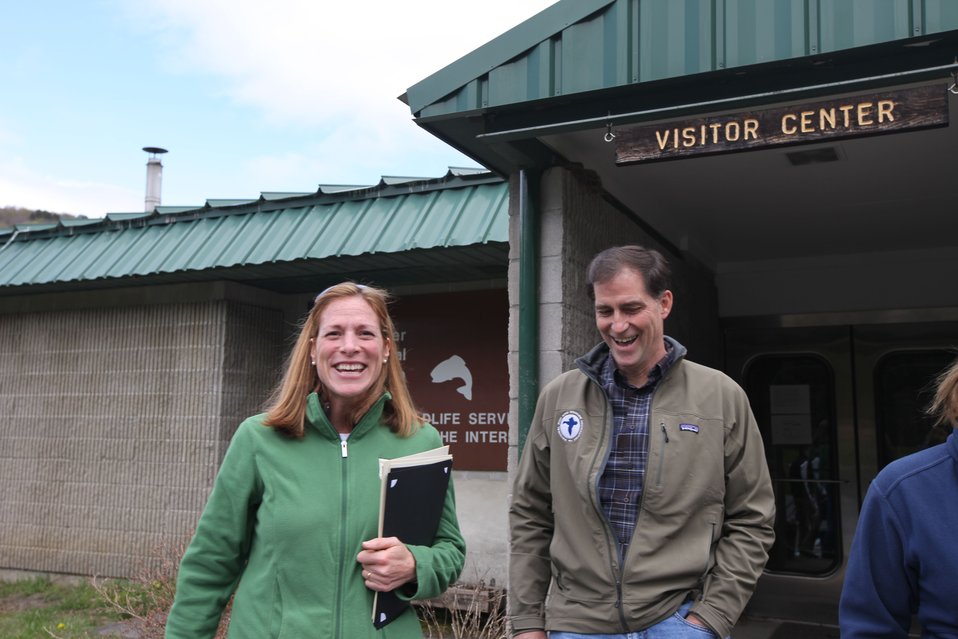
Northeast Regional Director Wendi Weber welcomes Service Director Dan Ashe to White River NFH

U.S. Fish & Wildlife Service Director Dan Ashe visits the Northeast Region
for a tour of the White River National Fish Hatchery in Bethel, Vermont on
April 27, 2012. The hatchery was devastated by Tropical Storm Irene and
Dan Ashe had the chance to meet and thank the staff for their heroic work.
Director Ashe also visited restoration/flood response/fish passage project
sites in Rochester, Vermont and met with local officials and staff from the
White River Partnership.